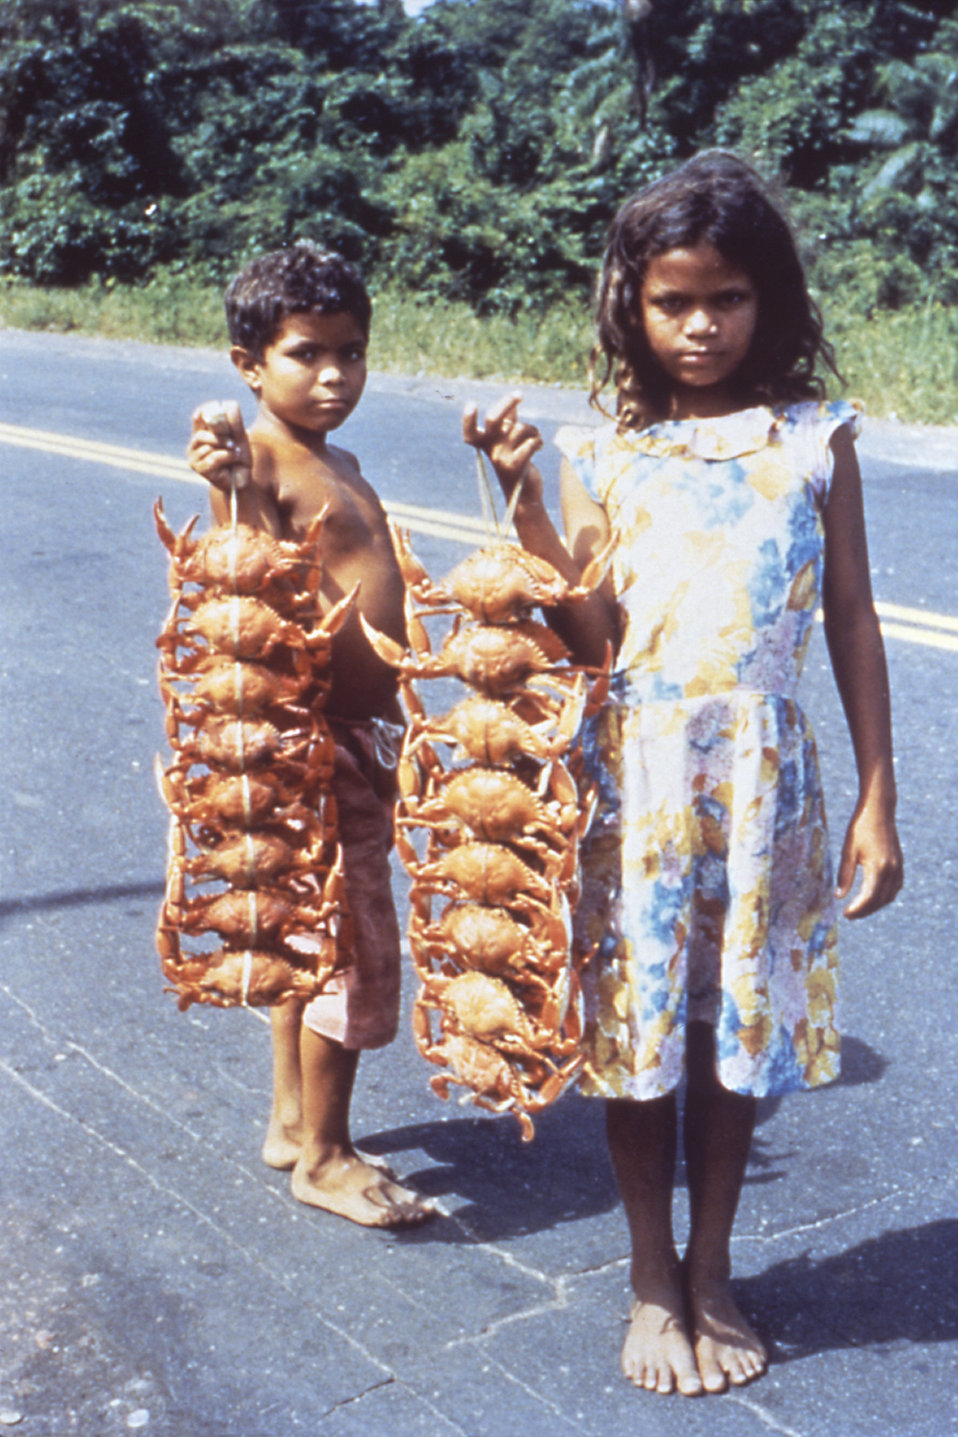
This slide shows two young Brazilian street vendors selling cooked crabs by the wayside.